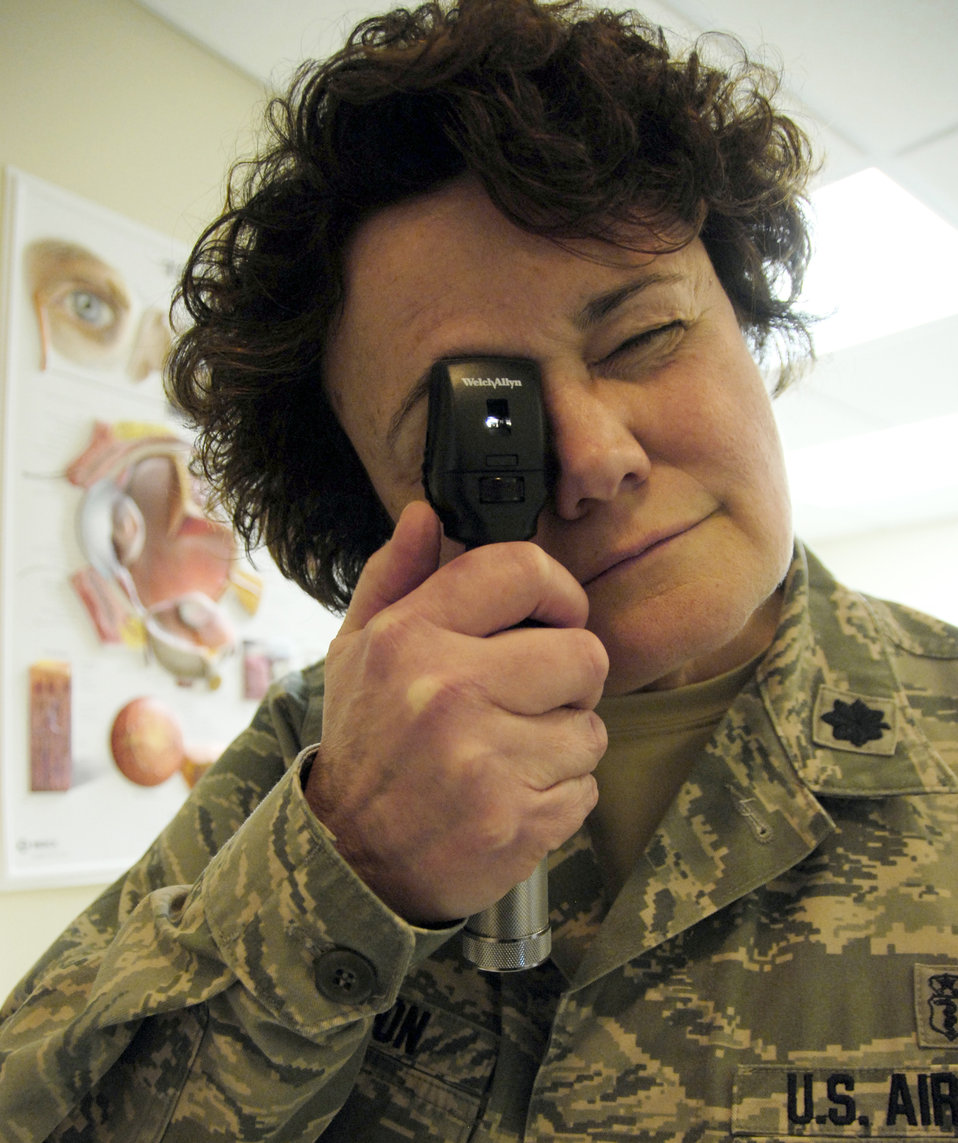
Eglin doctor keeps eye on goal

Lt. Col. Annette Williamson looks at a patient's eyes during a routine exam Feb. 18, 2010, at Eglin Air Force Base, Fla. Colonel Williamson, a 15-year veteran, was named optometrist of the year by the Air Force, the Armed Forces Optometric Society and the Association of Military Surgeons. Colonel Williamson is assigned to the 96th Aerospace Medicine Squadron.